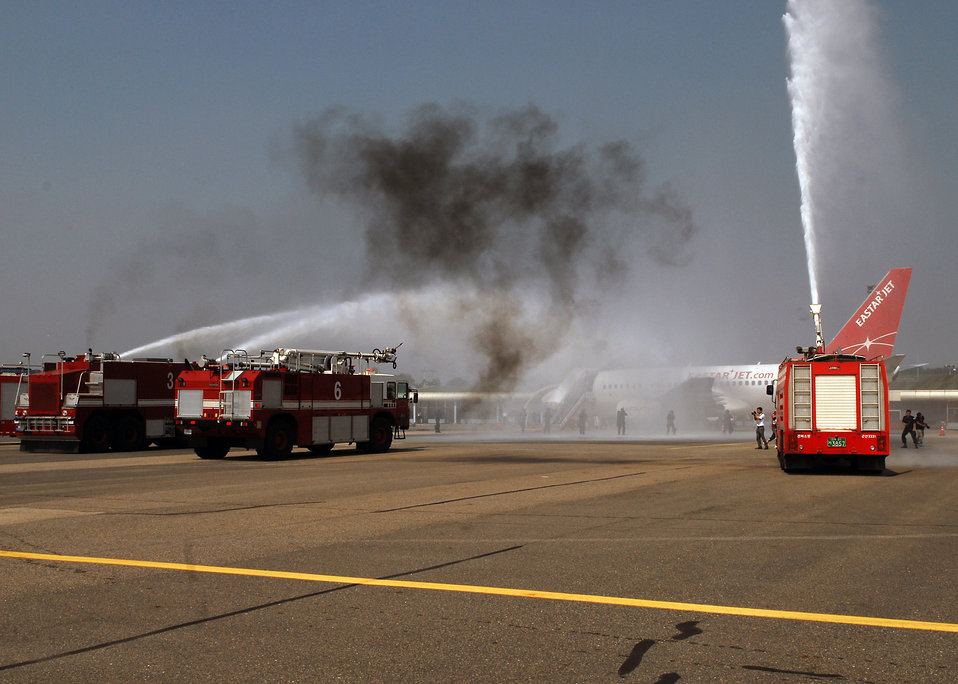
First responders

Members of the 8th Civil Engineer Squadron and South Korean fire departments extinguish a simulated burning aircraft as part of an exercise at the Gunsan airport Sept. 17, 2010, at Kunsan Air Base, South Korea. The exercise is conducted annually to enhance counterterrorism and prepare emergency responders for real-life situations.